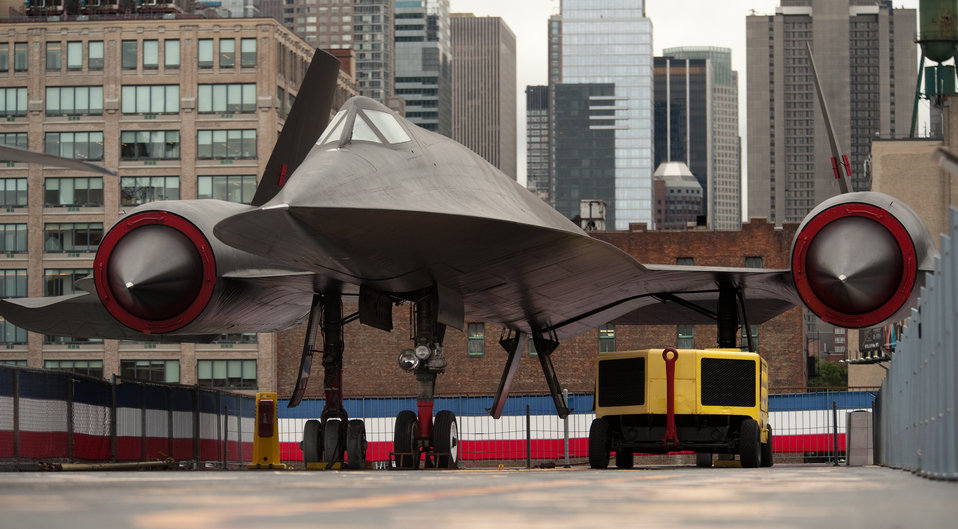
Air Force Week New York City Proclamation Ceremony

At the Air Force Week New York City proclamation ceremony, an A-12 reconnaissance aircraft, the predecessor to the Air Force's SR-71, is on display on the USS Intrepid Sea, Air and Space Museum Aug. 24, 2010.